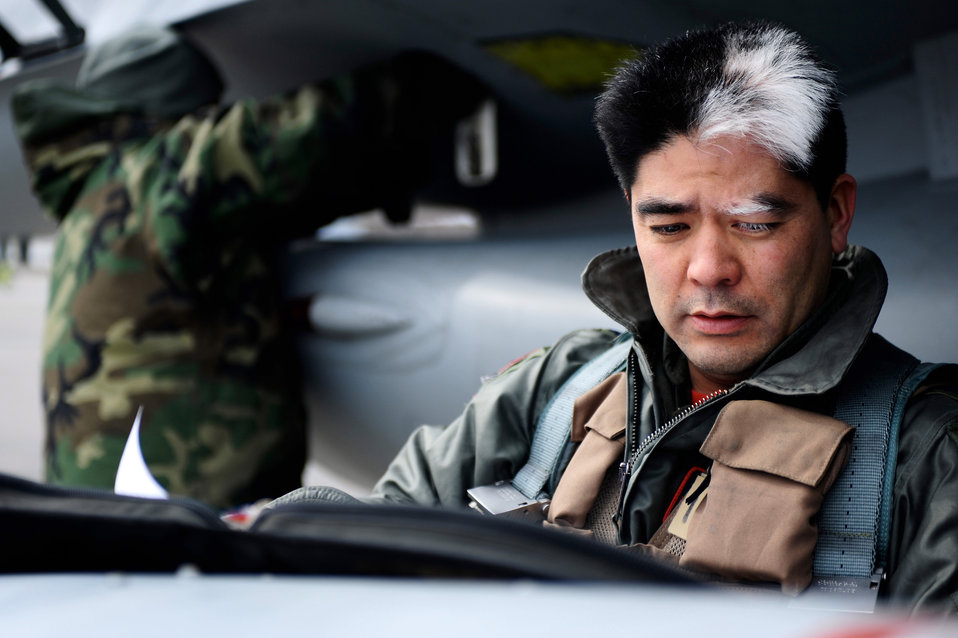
Fly, fight, win: Red Flag-Alaska pilots

Lt. Col. Michael Kato reads his preflight inspection checklist during Red Flag-Alaska 09-2 April 24 at Eielson Air Force Base, Alaska. This exercise provides unique opportunities to integrate various forces into joint, coalition and bilateral training from a simulated forward operating base. Colonel Kato is assigned to the 124th Fighter Squadron at Des Moines, Iowa.